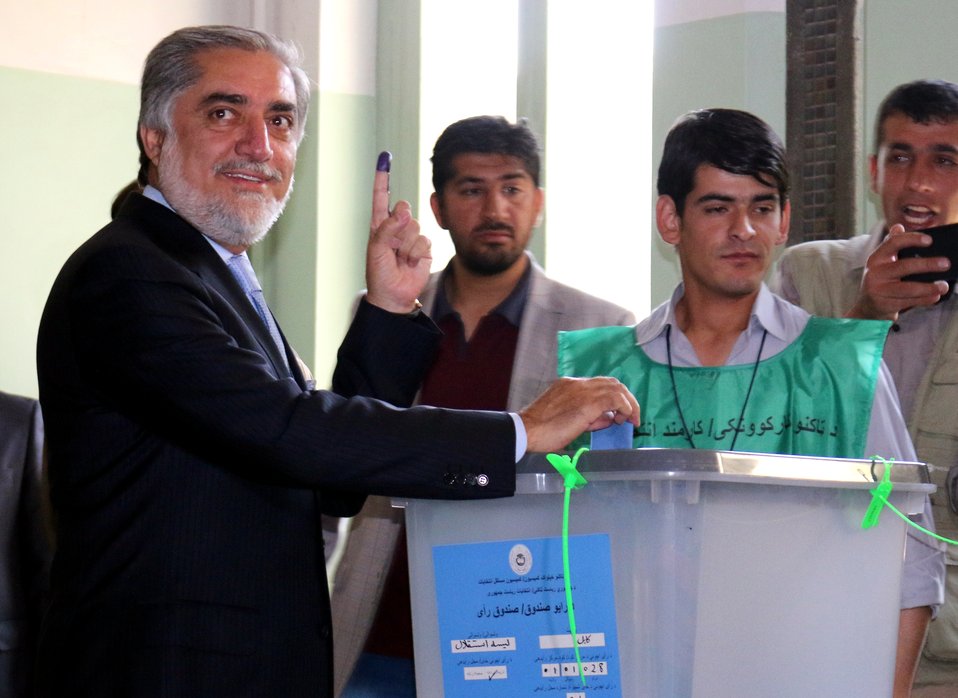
Dr. Abdullah Abdullah, presidential candidate casts his vote in Kabul.